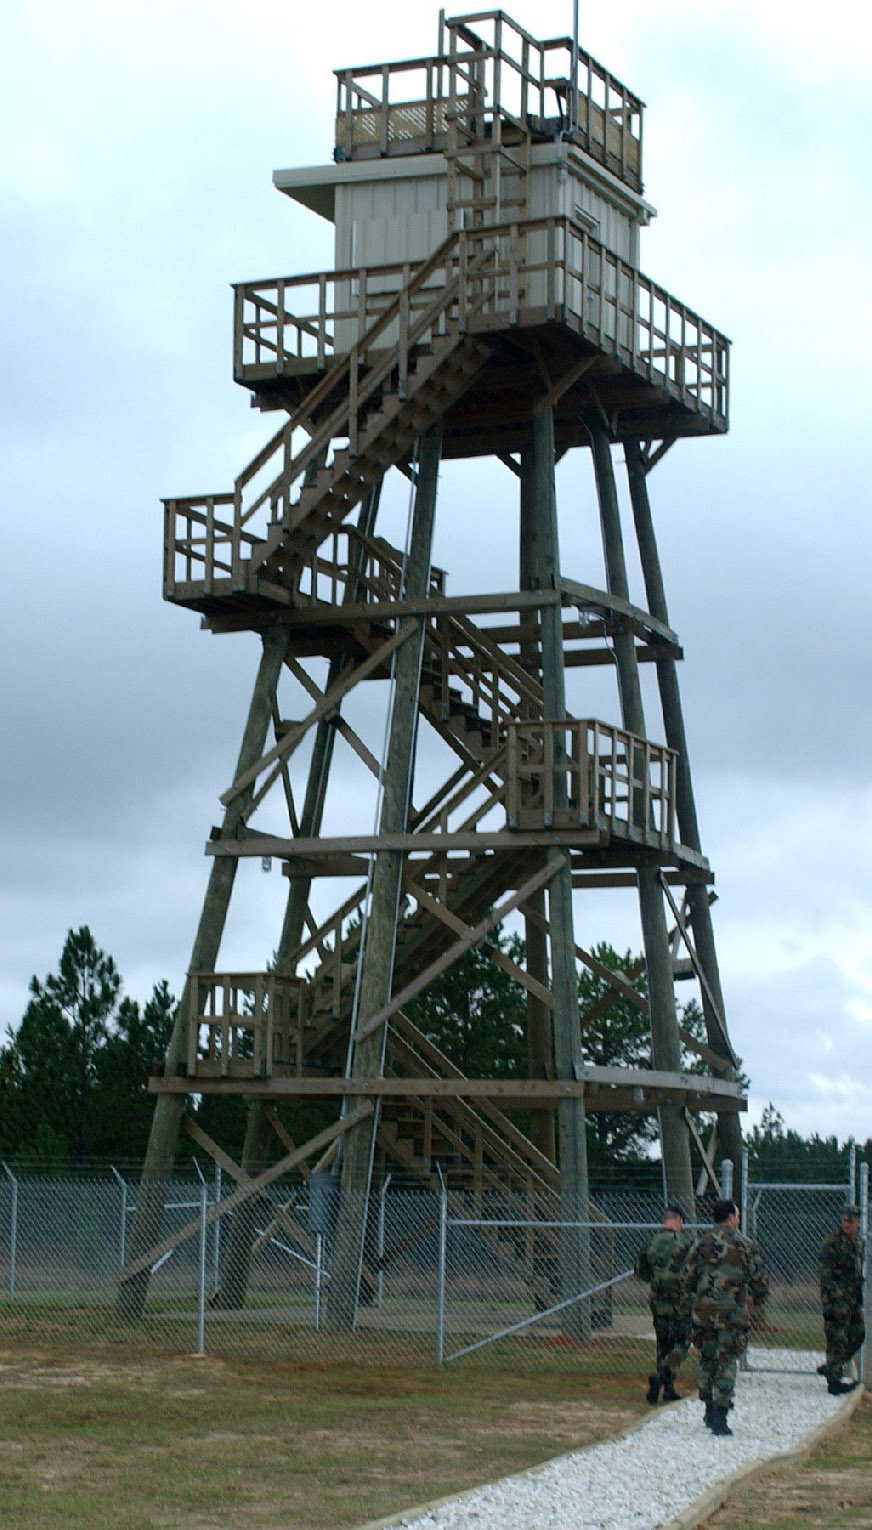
Range control tower dedication honors two Airmen killed in combat

FORT POLK, La. -- Tactical air control party Airmen visit the 52-foot wooden range control tower here Nov. 30 following a dedication ceremony. The tower was dedicated to Staff Sgt. Jacob Frazier and Airman 1st Class Raymond Losano. They were the first tactical control Airmen killed in combat since the inception of the career field during the Korean War.